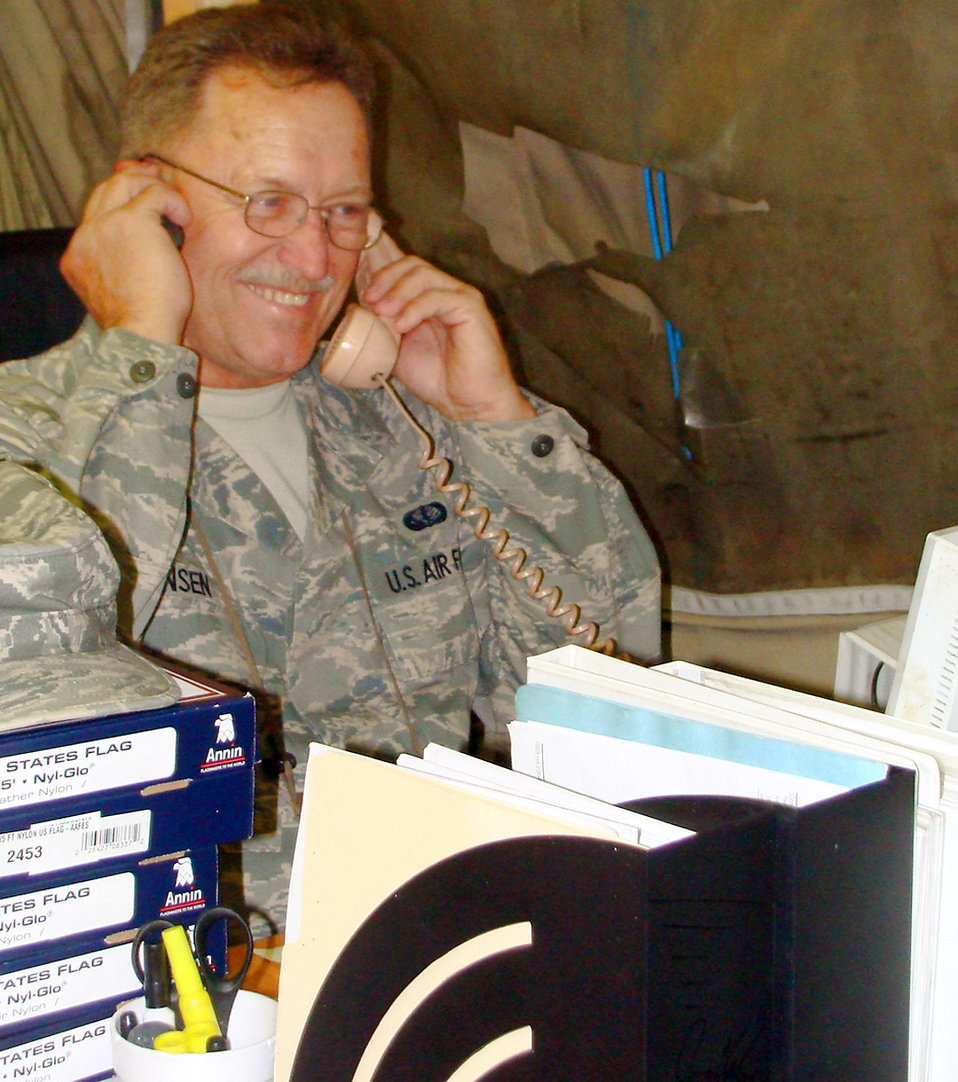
Manas Airman marries bride 16,000 miles away

Staff Sgt. Albert Jensen is all smiles as he says, 'I do' and marries his long-time sweetheart, Charlene Kehaualani Meyer, in Hawaii through a proxy marriage ceremony Aug. 8 here. The wedding spanned 16 time zones and 16,000 miles between the bride in Hawaii, chaplain in Montana, and groom in the Kyrgyz Republic.